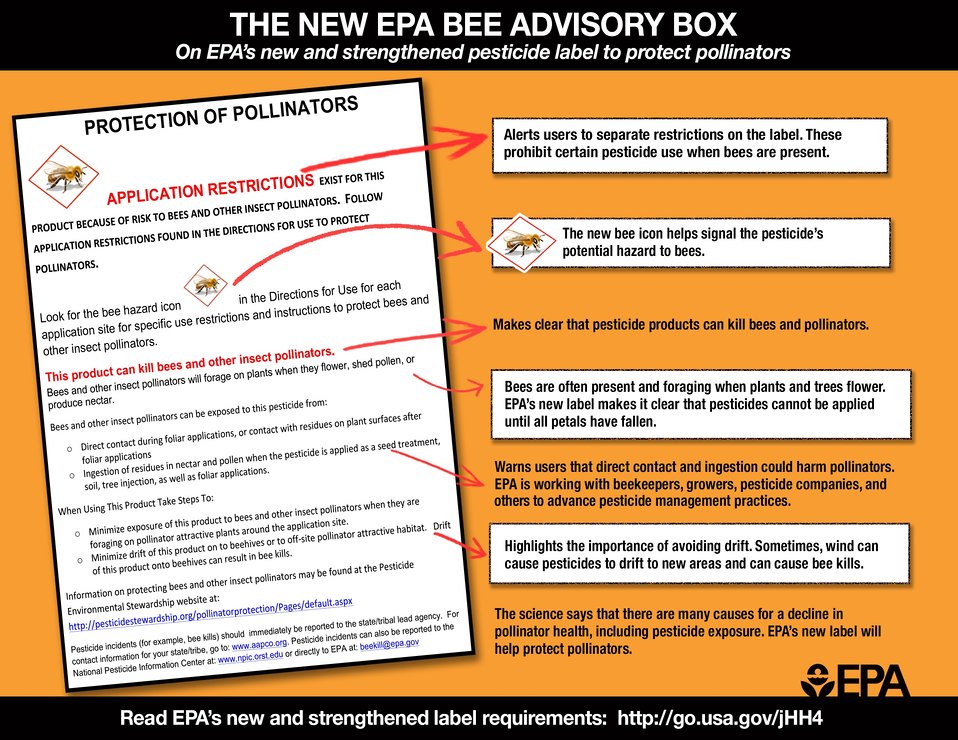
Bee Advisory Box Infographic

Protecting #bees is important business. Our new #Bee Advisory Box on the product labels for four #neonicotinoids will help protect honey #bees and other pollinators.